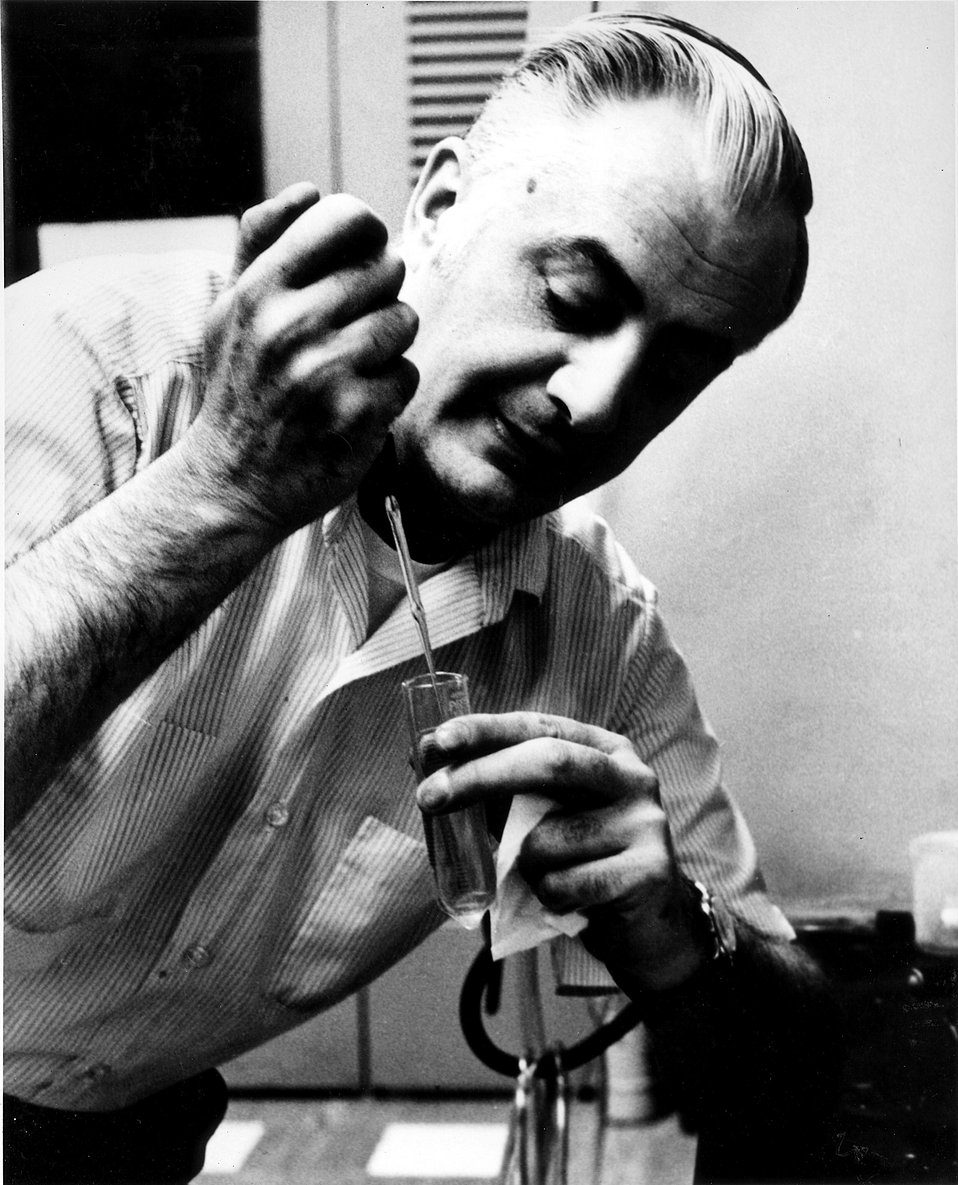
An Argonne chemist prepares a lunar sample for analysis.
c.1970